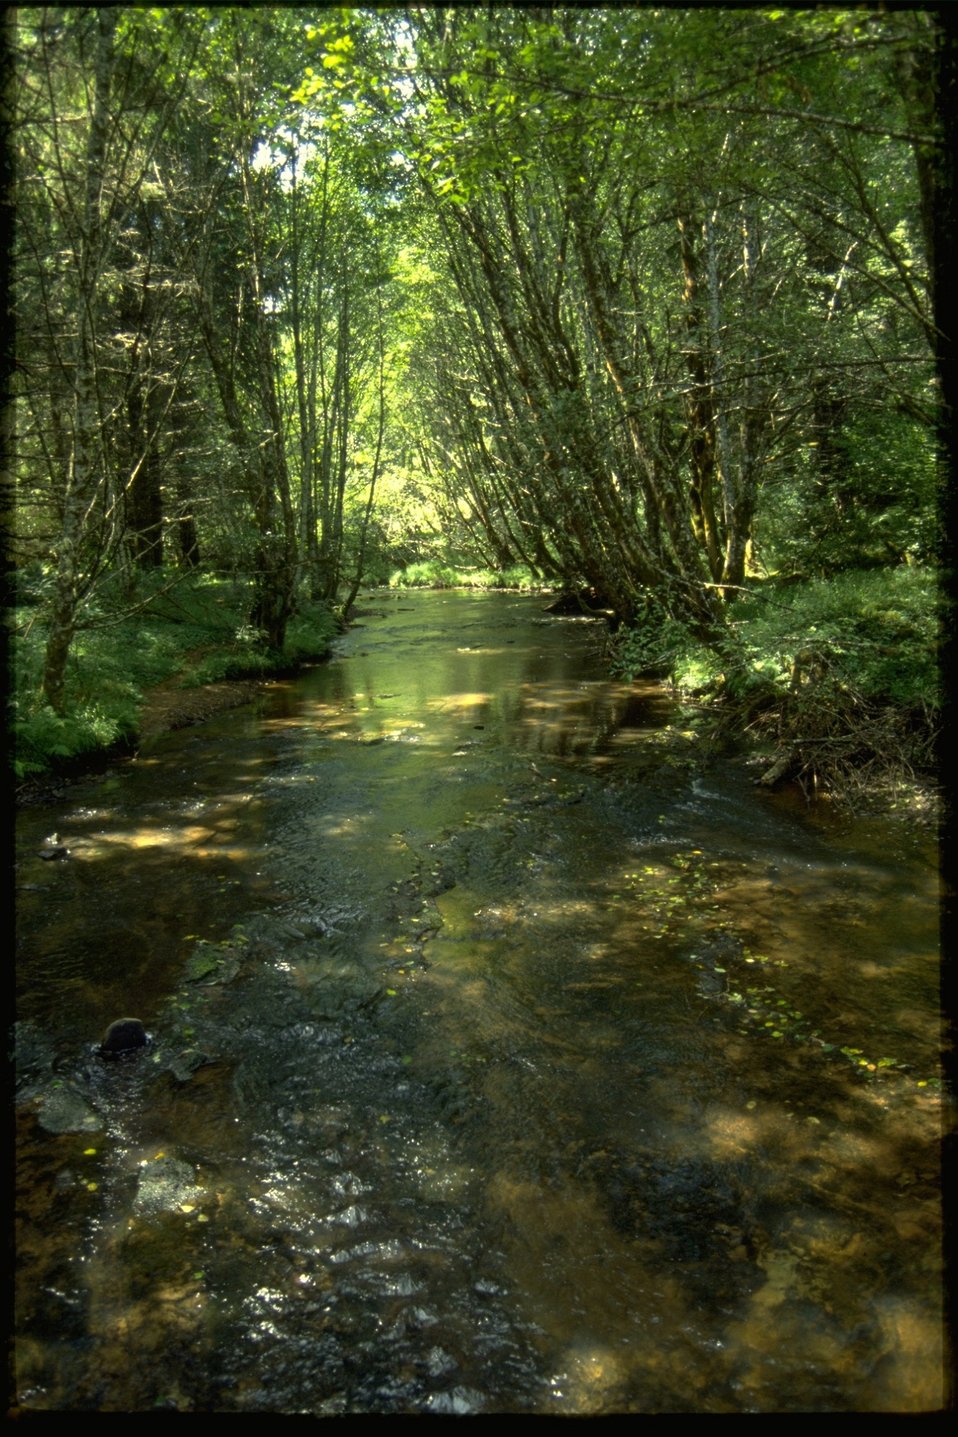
The Alsea Creek.